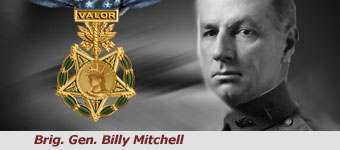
Brig. Gen. William L. Mitchell is a Medal of Honor receipient for his pioneering work and foresight in the field of American military aviation. He is one of two Americans awarded the medal during peacetime.